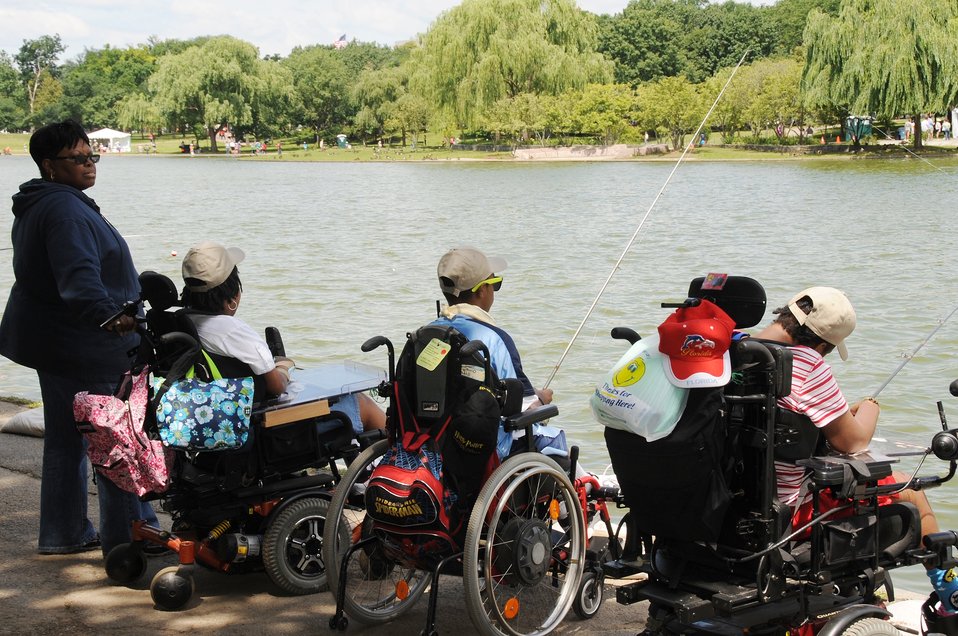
Fishing is for everyone

Special needs children from Sharpe Health School participate in the fishing event.